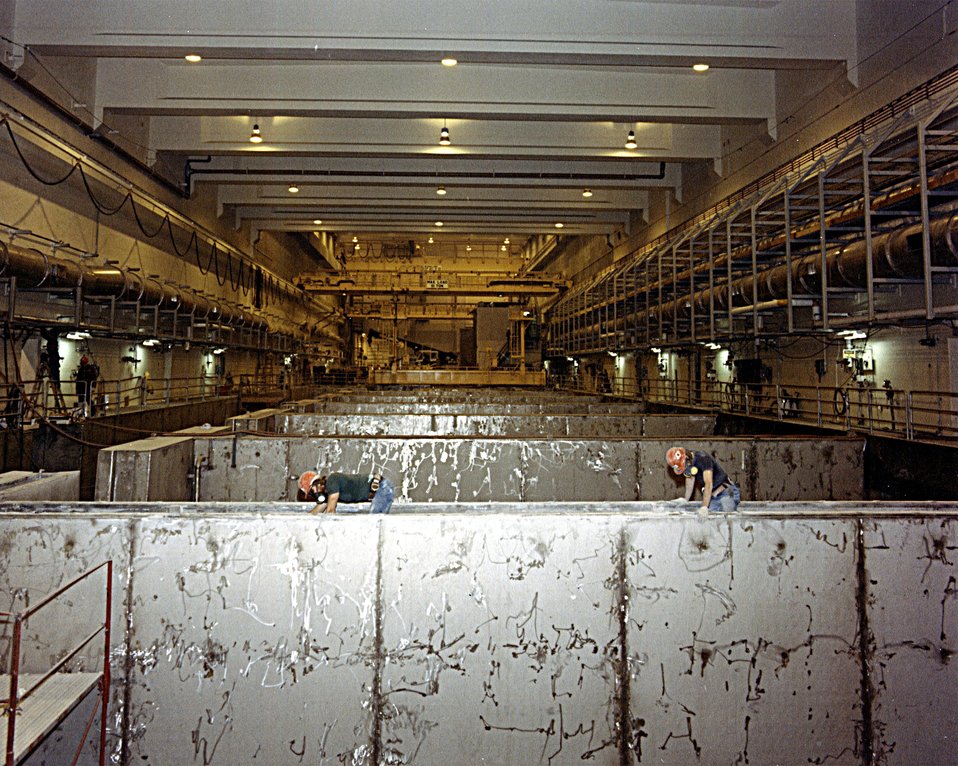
CONSTRUCTION OF THE SIX FUEL STORAGE AND AUXILIARY POOLS WHICH ARE 31 TO 41 FEET DEEP.

THE FLUORINEL FACILITY WILL INCLUDE AREAS FOR THE RECEIPT, HANDLING, STORAGE, AND DISSOLUTION OF SPENT REACTOR FUEL. THE DISSOLVED SOLUTION WILL BE TRANSFERRED TO EXISTING FACILITIES AT THE IDAHO FUEL PROCESSING FACILITY FOR RECOVERY OF CONTAINED URANIUM. THE FACILITY WILL PROCESS A WIDE VARIETY OF SPENT FUELS, INCLUDING NAVAL, TEST, AND RESEARCH REACTOR FUELS, TO INCREASE THE AMOUNT OF URANIUM RESOURCE AVAILABLE TO THE UNITED STATES. OVER 39,000 CUBIC YARDS OF CONCRETE, MORE THAN 5,250 TONS OF REINFORCING STEEL AND 120,000 SQUARE FEET OF STAINLESS-STEEL LINER PLATE WERE USED IN CONSTRUCTING THE FAST FACILITY.